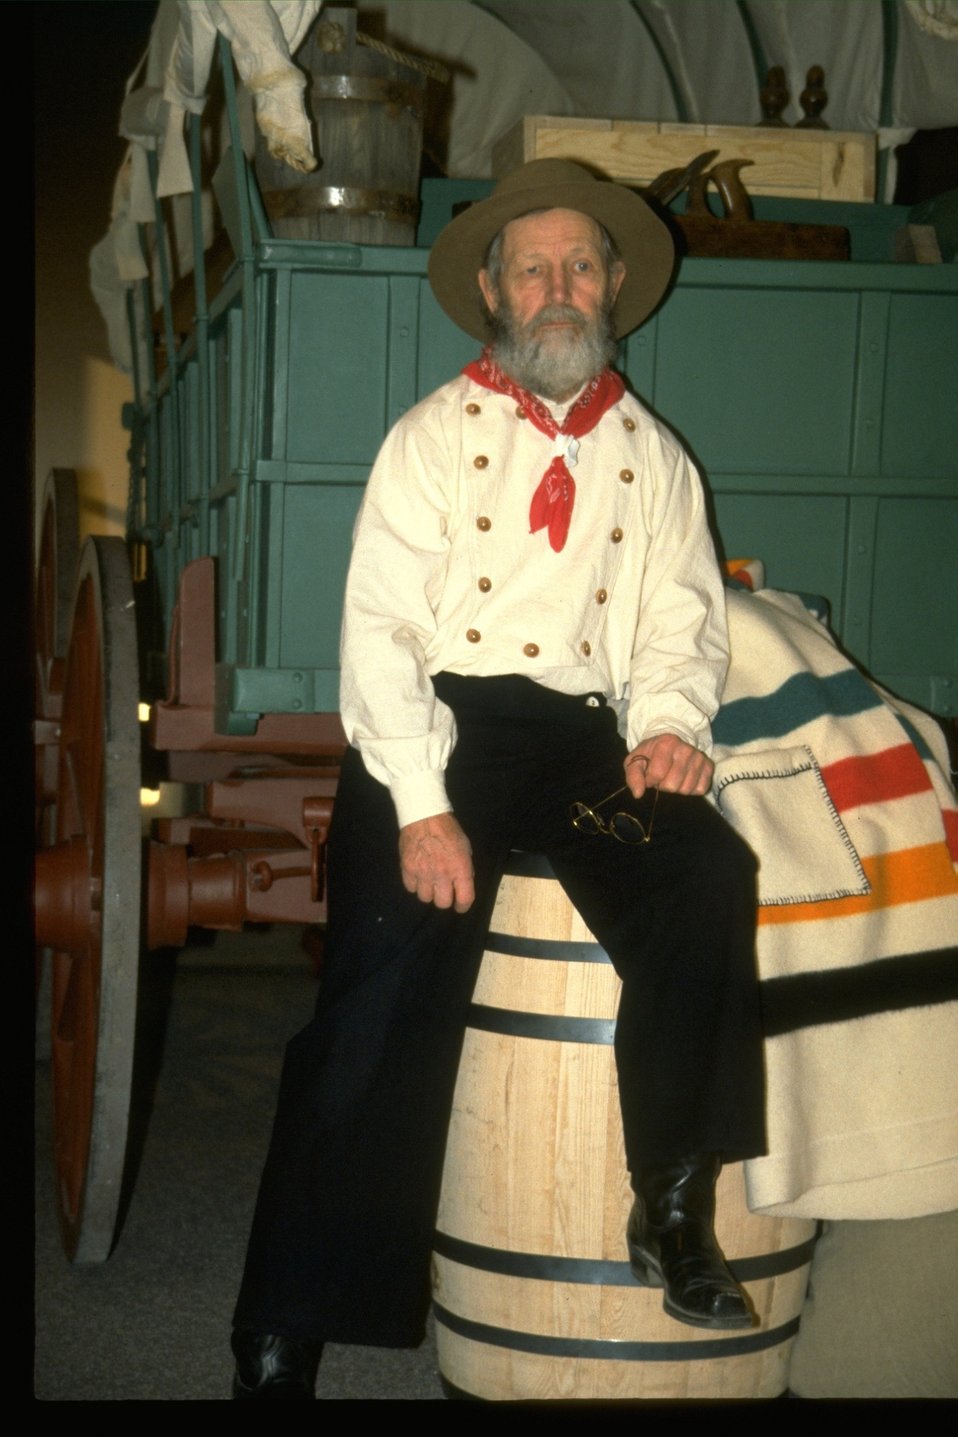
George Johnson in costume for performance at the NHOTIC.